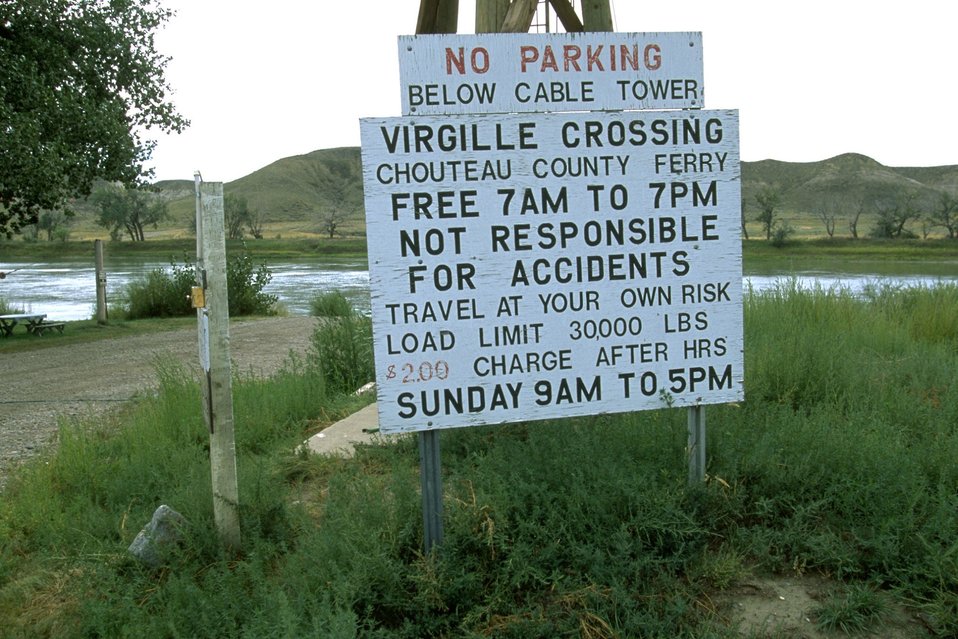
Virgelle Ferry on Upper Missouri River near Loma